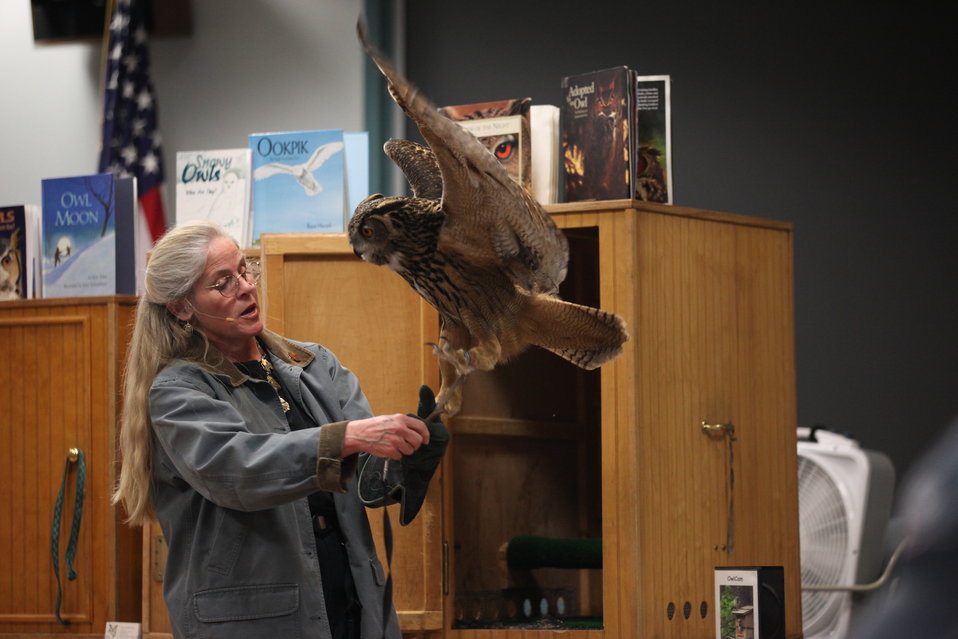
Great Horned Owl flapping its wings for the audience at the USFWS fishing derby.